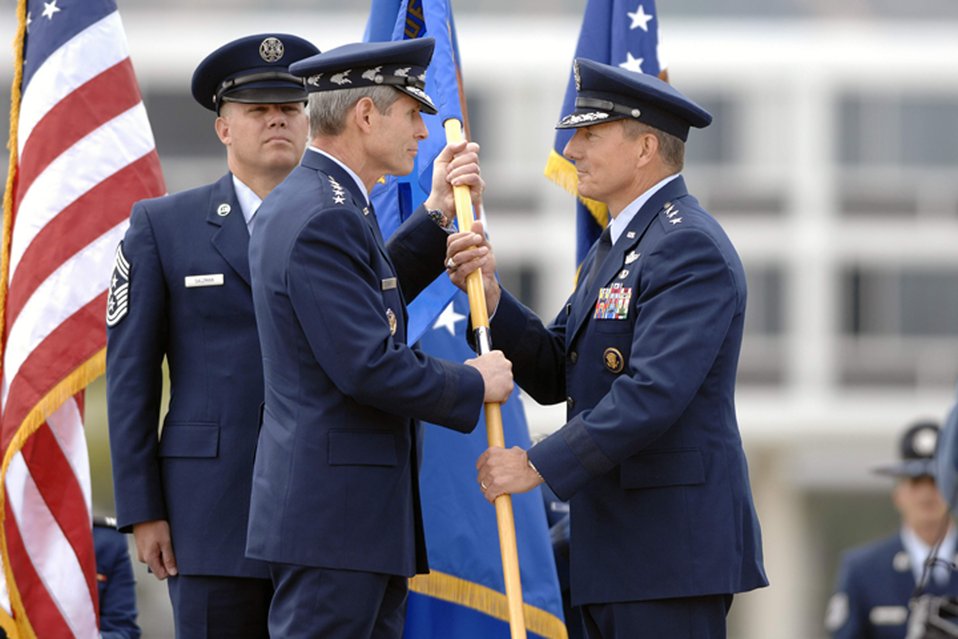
Academy gets new superintendent

Lt. Gen. Michael Gould (right) accepts the U.S. Air Force Academy guidon from Gen. Norton Schwartz, chief of staff of the Air Force, during a change of command ceremony at the Academy June 9. General Gould, a class of '76 Academy graduate, returns as the 18th superintendant, replacing Lt. Gen. John Regni, who is retiring. Academy Command Chief Master Sgt. John Salzman waits to secure the unit flag following the exchange.